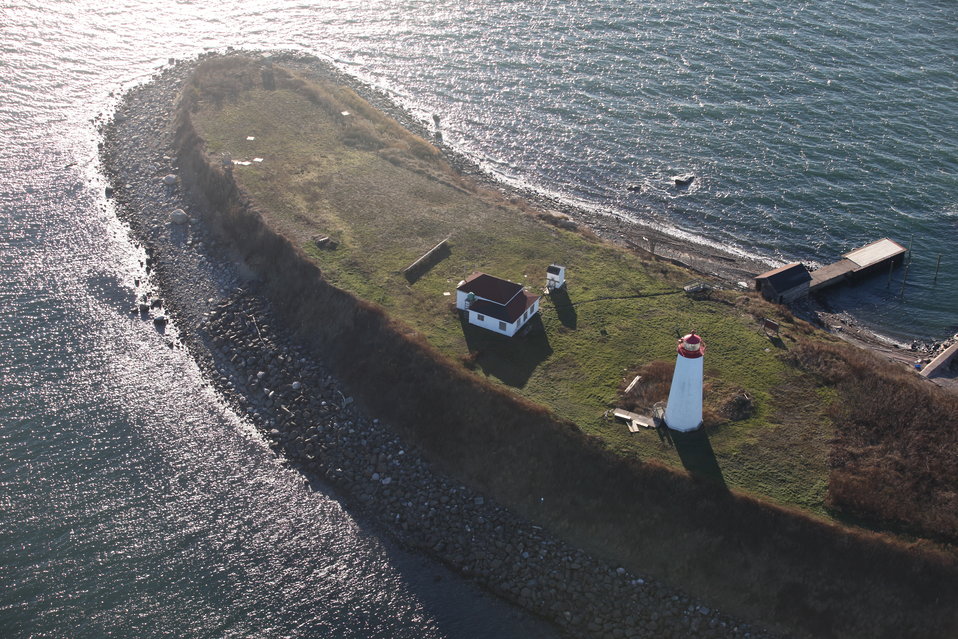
Stewart B. McKinney National Wildlife Refuge-Falkner Island (CT)

Aerial view of Falkner Island in the aftermath of storm Sandy.